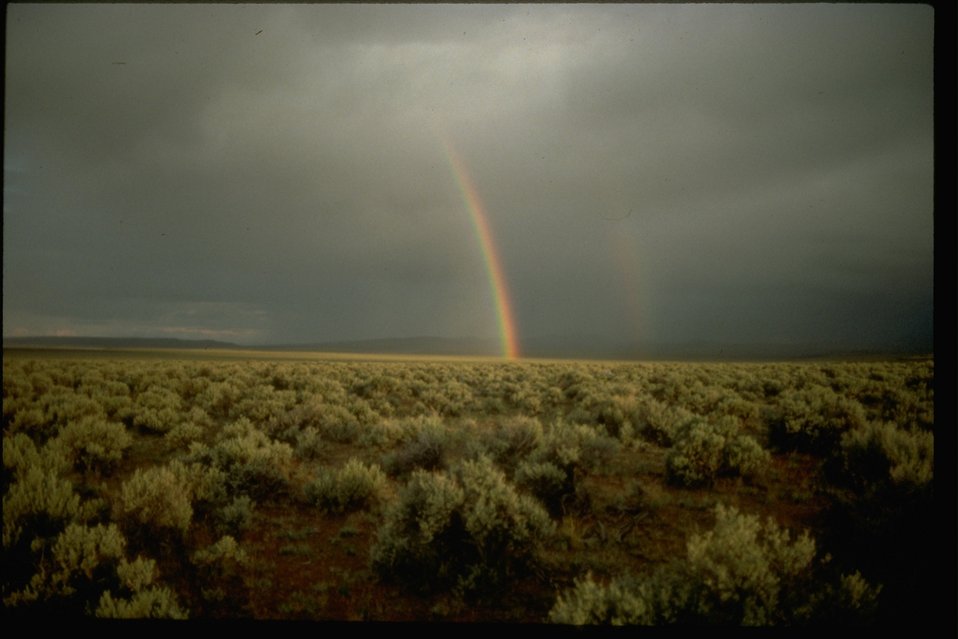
Dramatic rainbow on a prairie.